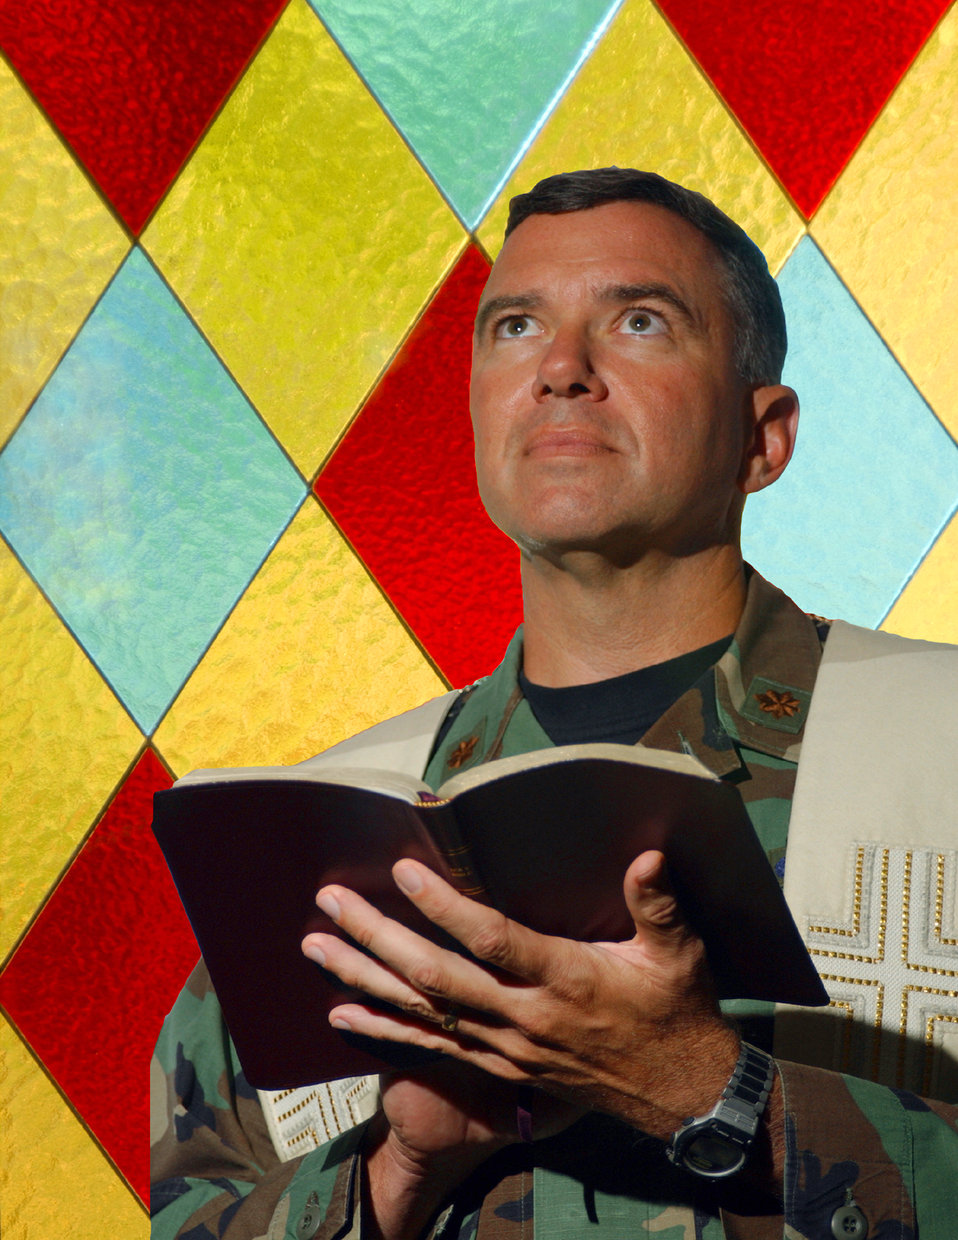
Schaick

INCIRLIK AIR BASE, Turkey (AFPN) -- Chaplain (Maj.) Steve Schaick, 39th Air Base Group senior Protestant chaplain, conducts service at the chapel here. Schaick won an award from the National Bible Association for using the televison sitcom, The Simpsons,